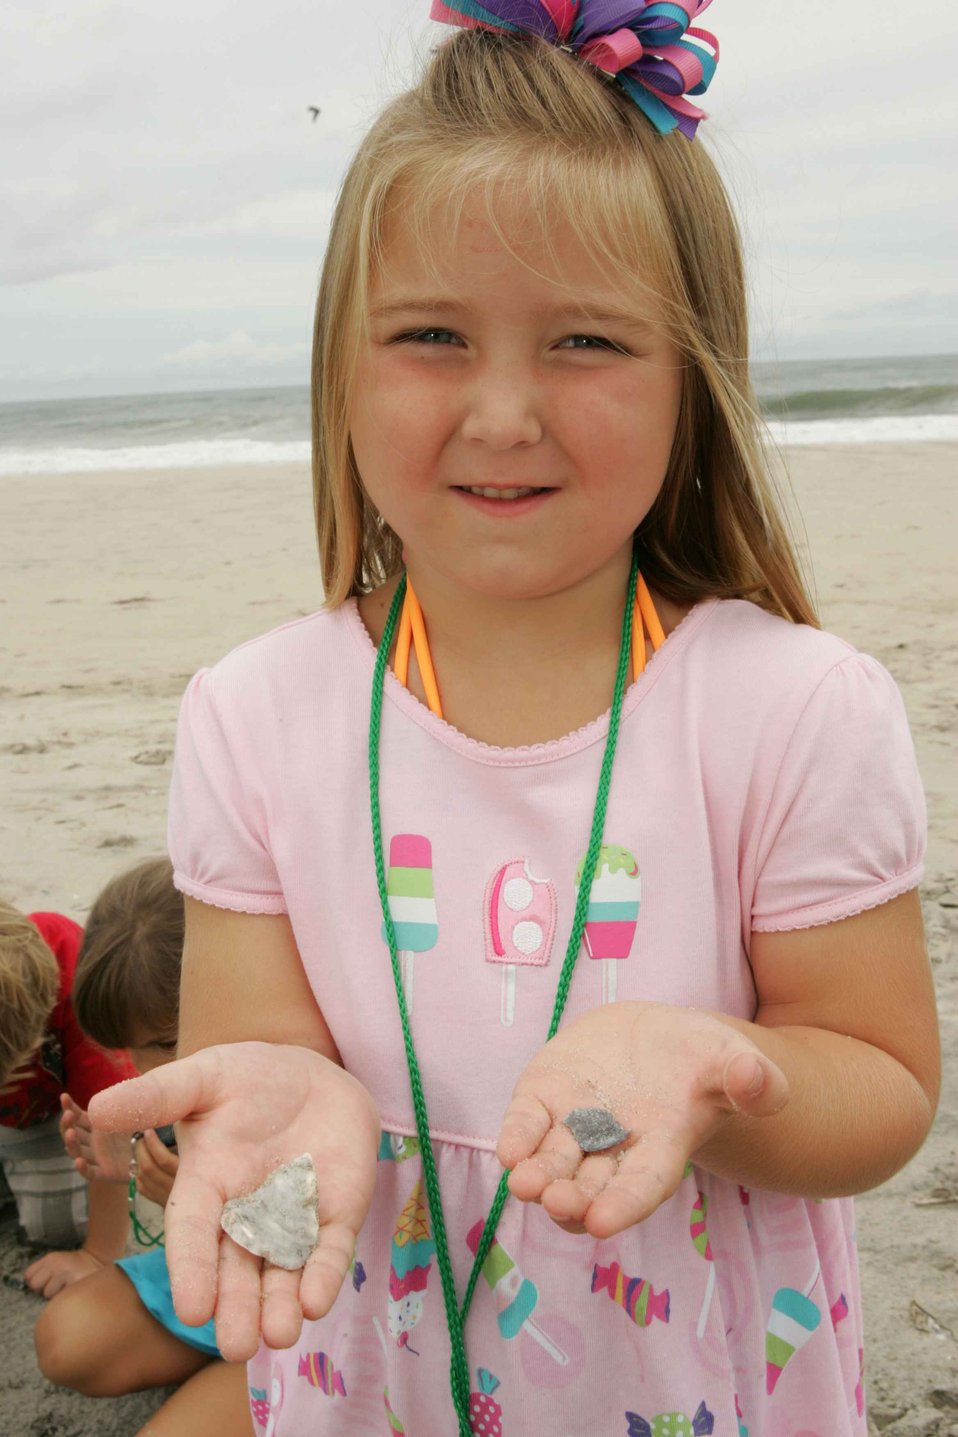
English:
Image title: Cute young blonde girl face Image from Public domain images website, http://www.public-domain-image.com/full-image/people-public-domain-images-pictures/children-kids-public-domain-images-pictures/cute-young-blonde-girl-face.jpg.html